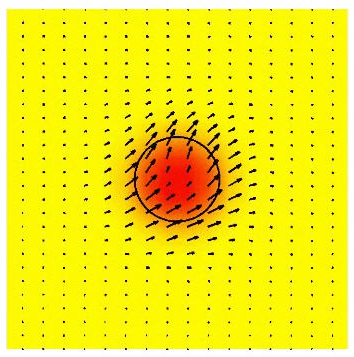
Soliton

The shows the development of the soliton over the course of about 2.7 nanoseconds. Current begins passing through the hole (center), causing the magnetization to oscillate. These oscillations initially move throughout the layer, but after 1.8 ns the magnetization under the hole inverts to form the soliton (center changes to red) and the oscillations are then localized.